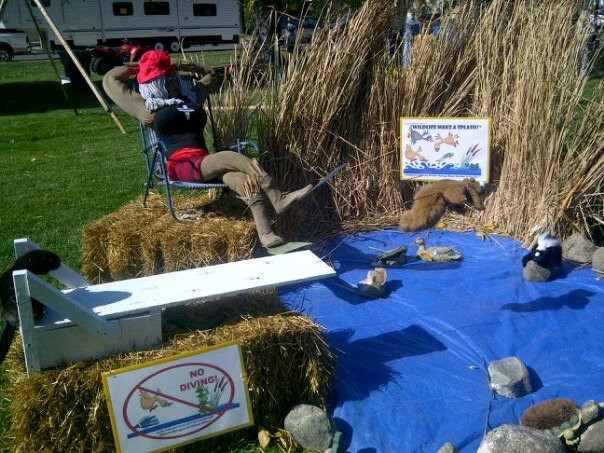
2011 Scarecrow Festival

Huron WMD entered a pool scene for Huron's Scarecrow Festival.